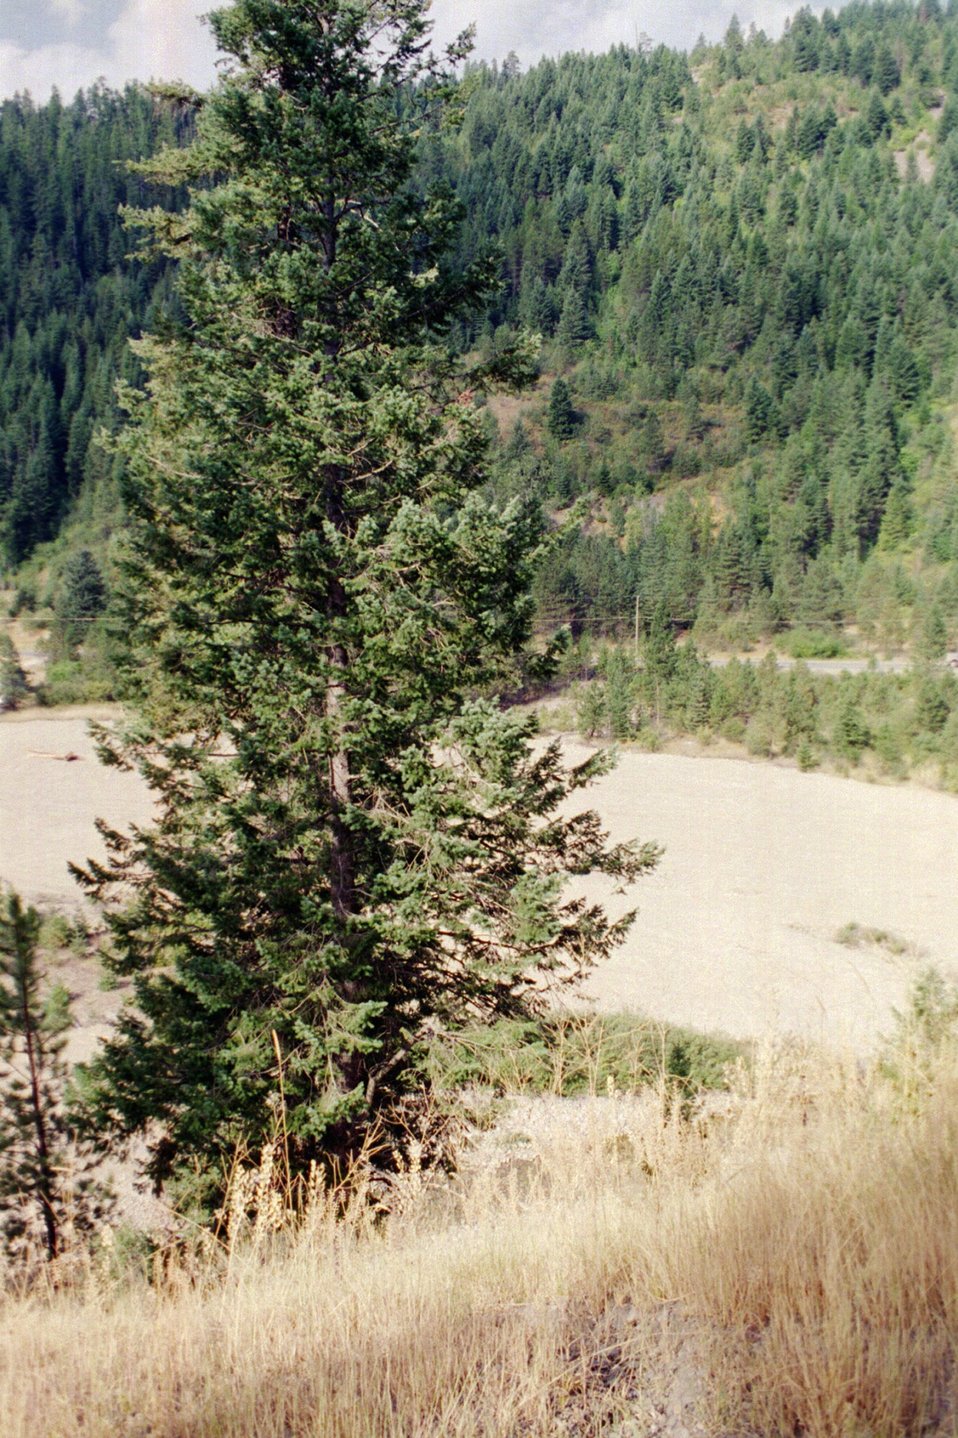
Riparian Area Stream Restoration from mining damage near Pinecreek Couer D'Alene Field Office UCSC Upper Columbia Salmon Clearwater District